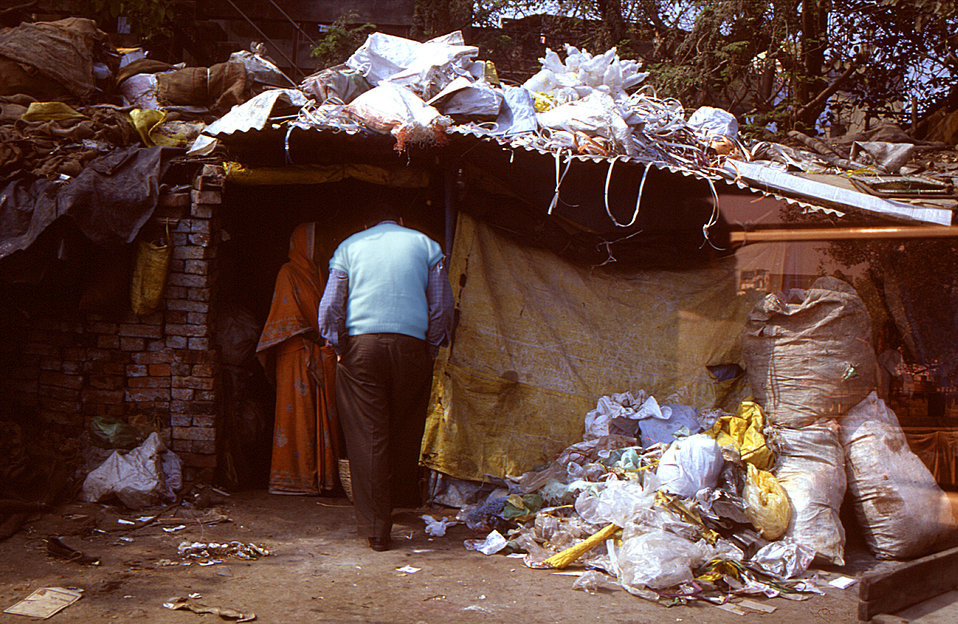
Wearing a blue-colored sweater, this 2000 image depicted Dr. Bharti, the Varanasi Surveillance Medical Officer, as he was visiting this slum area in order to ascertain whether or not the children who'd been living in this locale, had received their polio vaccine. The photograph was provided by Chris Zahniser, B.S.N., R.N., M.P.H., a STOP Transmission of Polio (STOP) immunization initiative team member and photographer who was assigned to the state of Uttar Pradesh in northern India, and spent three months working in the Districts of Gorakhpur and Deoria.